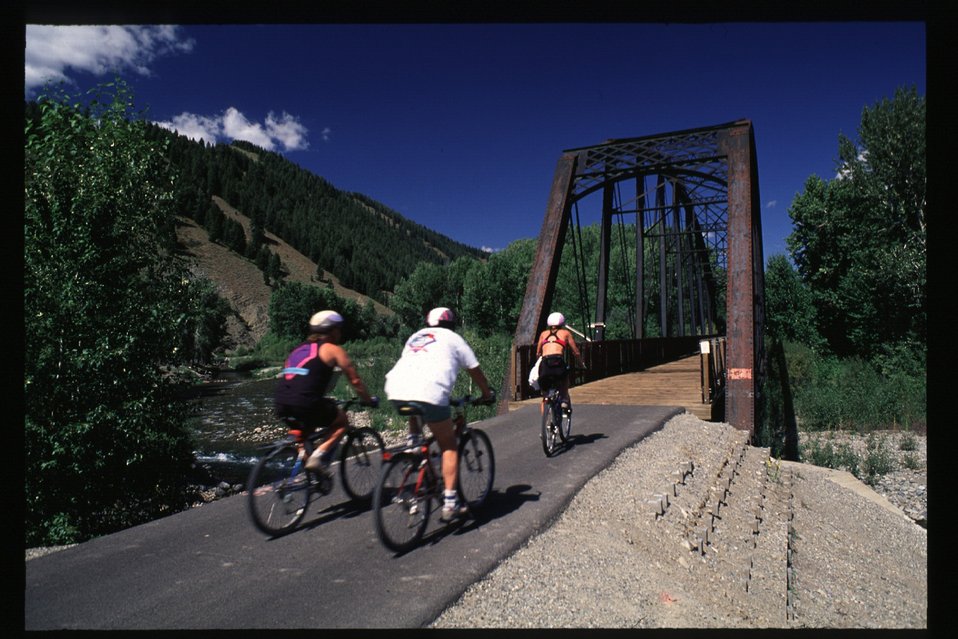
Recreation Scenic Biker Shoshone Field Office USRD Upper Snake River District